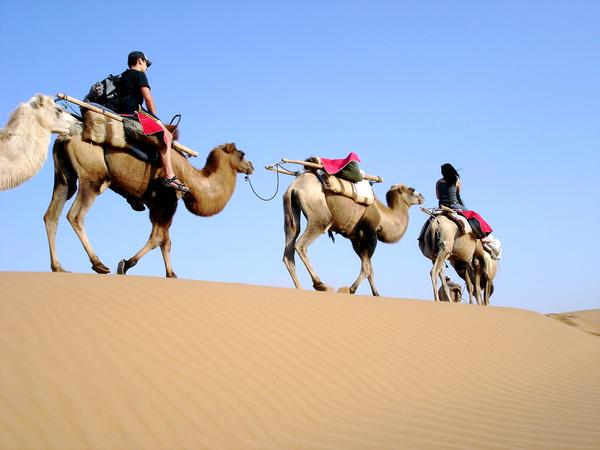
Camel ride in the Tengger Desert - August 19th, 2005. Train from Beijing to Ningxia Province.